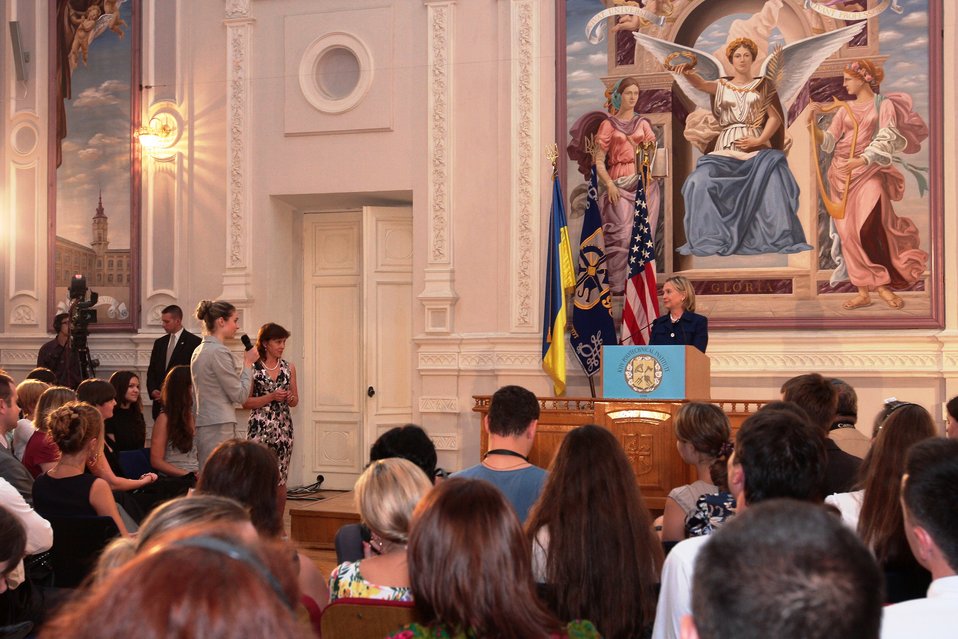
Secretary Clinton Addresses Kyiv Polytechnic Institute Town Hall

U.S. Secretary of State Hillary Rodham Clinton responds to students’ questions at Kyiv Polytechnic Institute in Kyiv, Ukraine, on July 2, 2010.